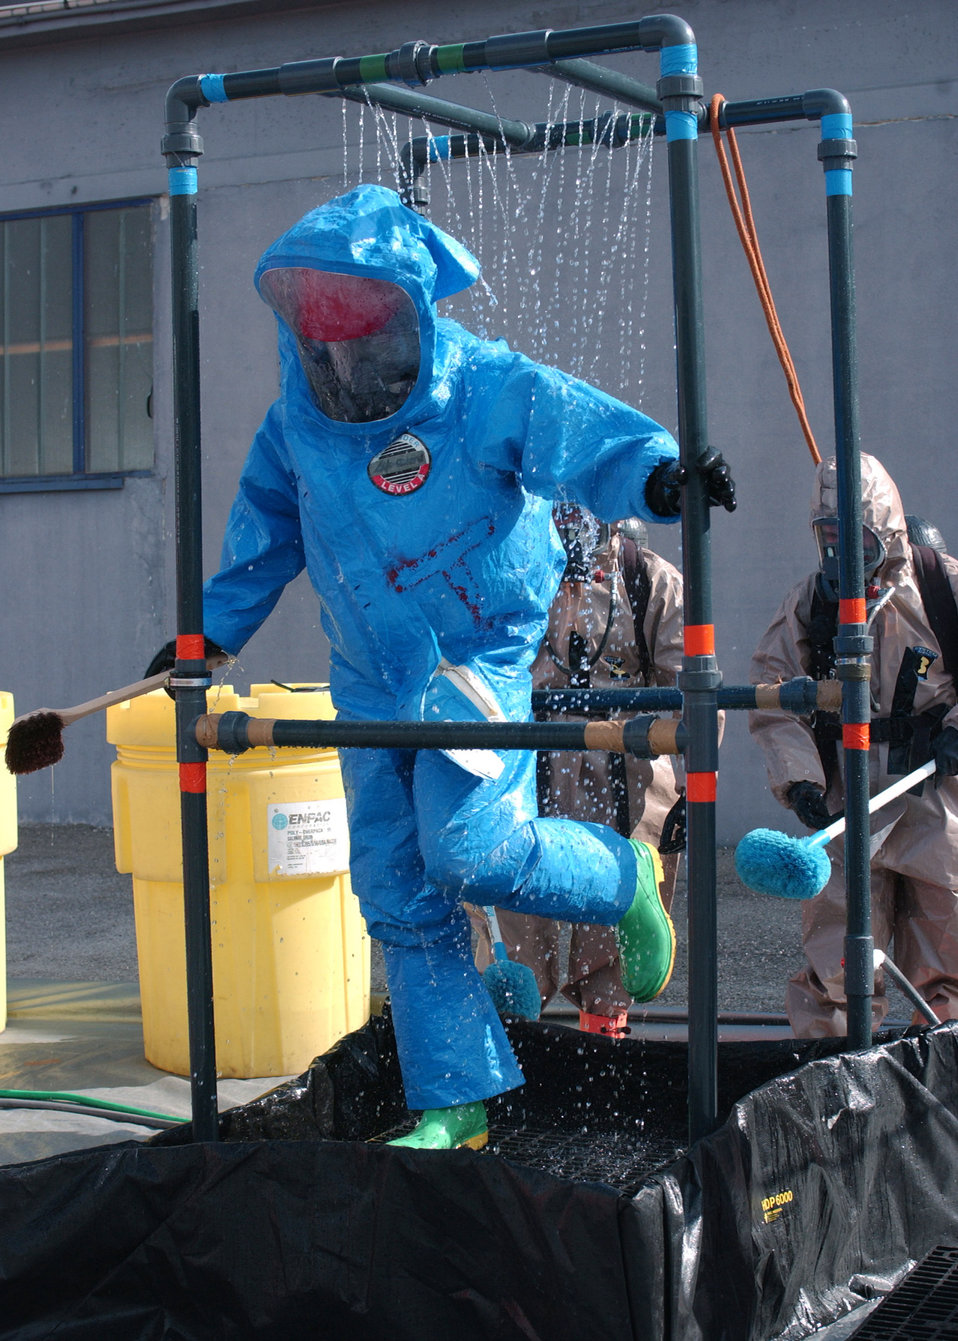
Decontaminated

PIANO, Italy - An Airman decontaminates himself after leaving a potential gas contaminated area during a mass casualty exercise simulating a terrorist attack here Sept. 13. The exercise was the first of its kind for the region, and allowed Italians and Americans to practice and strengthen their skills together.